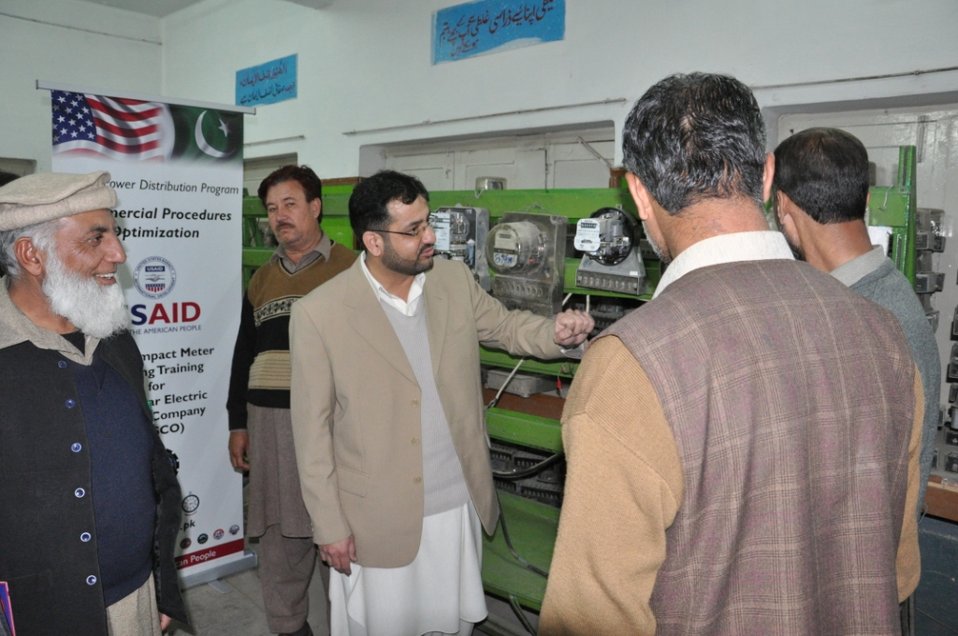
Meter Reading Training

Peshawar, February 27, 2012 - The USAID organized 'Quick Impact Meter Reading Training' at PESCO.